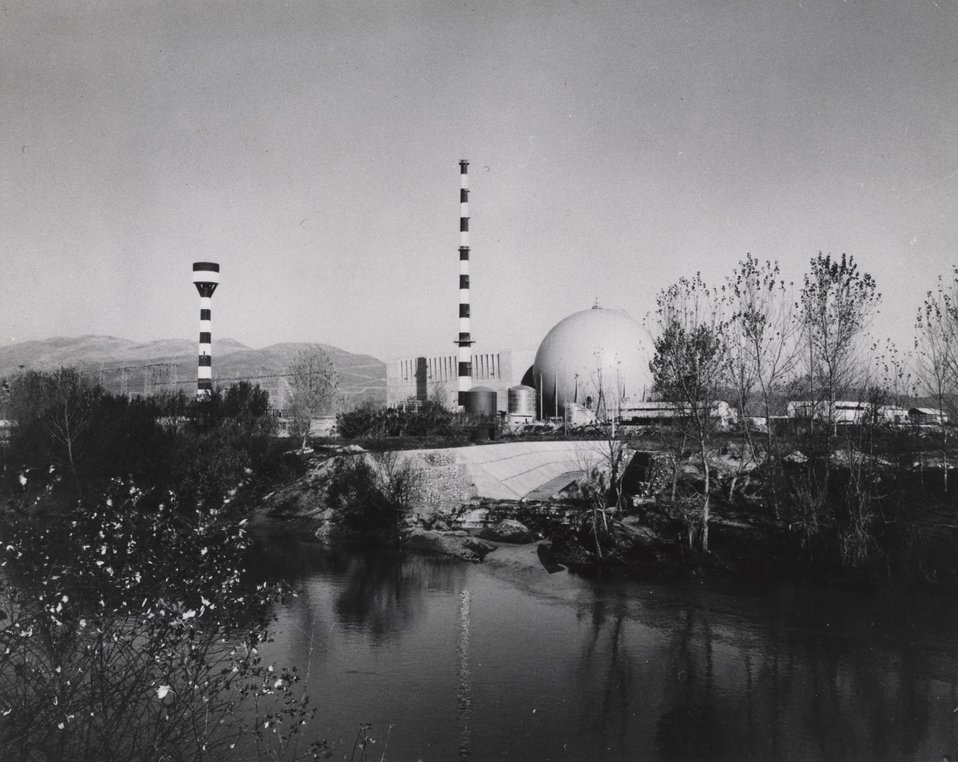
The Italian nuclear power plant SENN (Societa Elettronucleare Nazionale) on the Garigliano near Naples. c. 1967